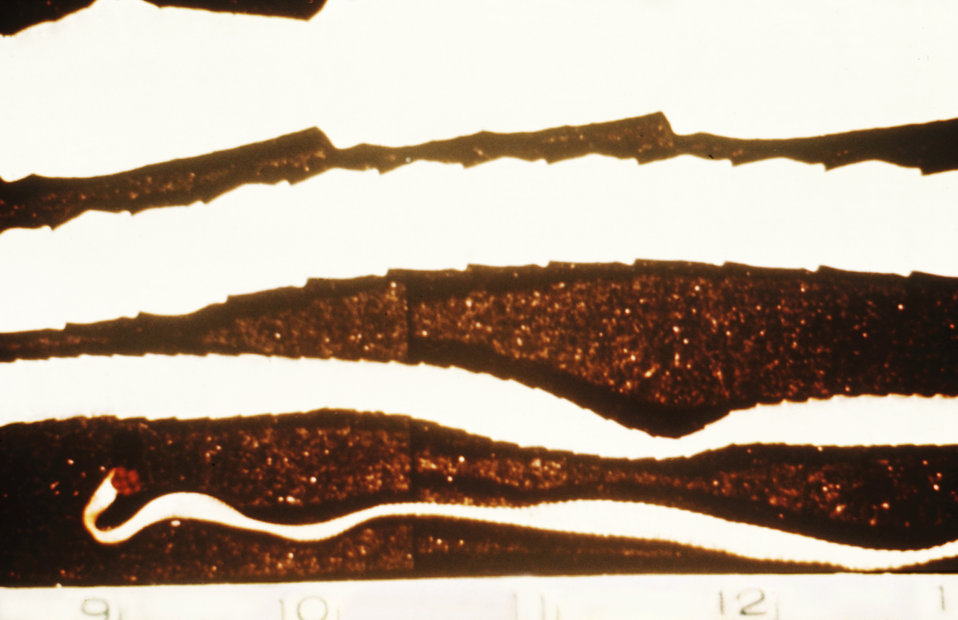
This photograph depicts a mature Taenia saginata tapeworm, a parasitic cestode organism.